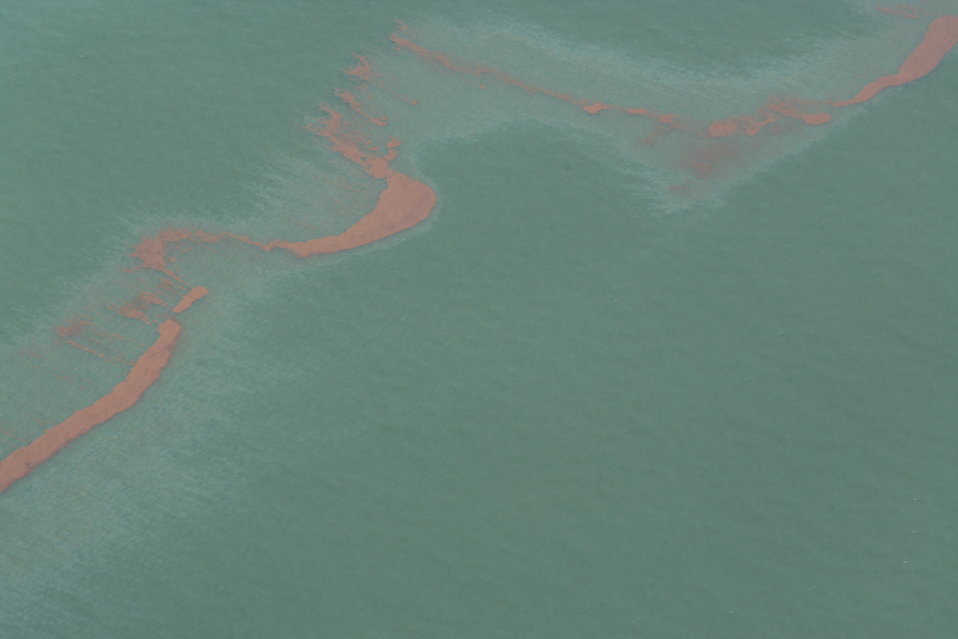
Flight 4 064